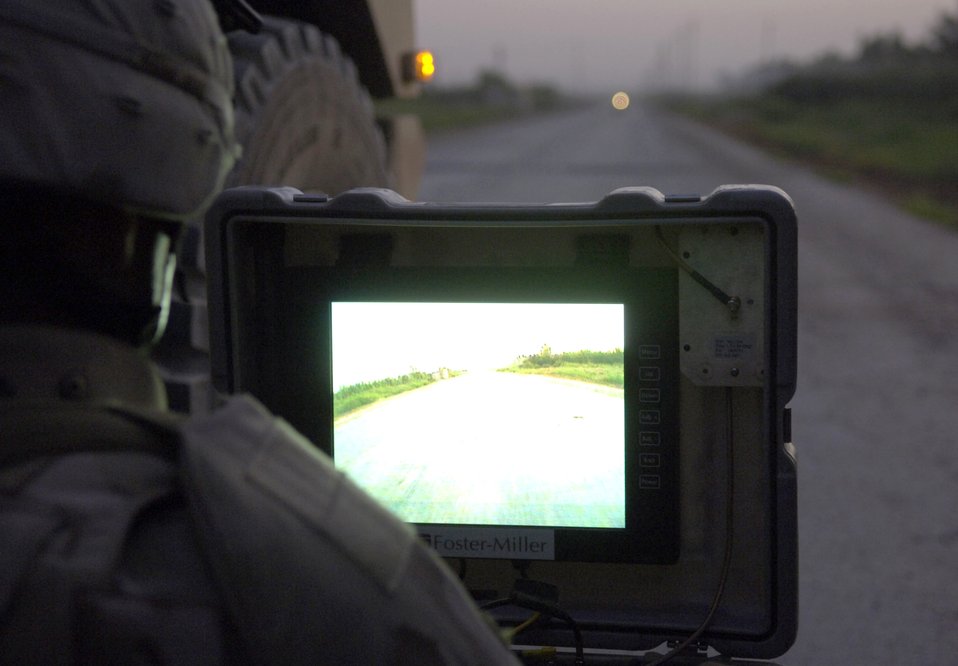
Remote control

Senior Airman Scott White remotely controls a Talon robot sent to inspect a possible improvised explosive device, or IED, at a location southwest of Baghdad, Iraq, on Wednesday, June 28. Explosive ordnance disposal technicians were called to the scene when an Army infantry unit discovered a wire protruding from a mound in the middle of a road. Airman White is with the 447th Expeditionary Civil Engineer Squadron, and is deployed from Nellis Air Force Base, Nev.